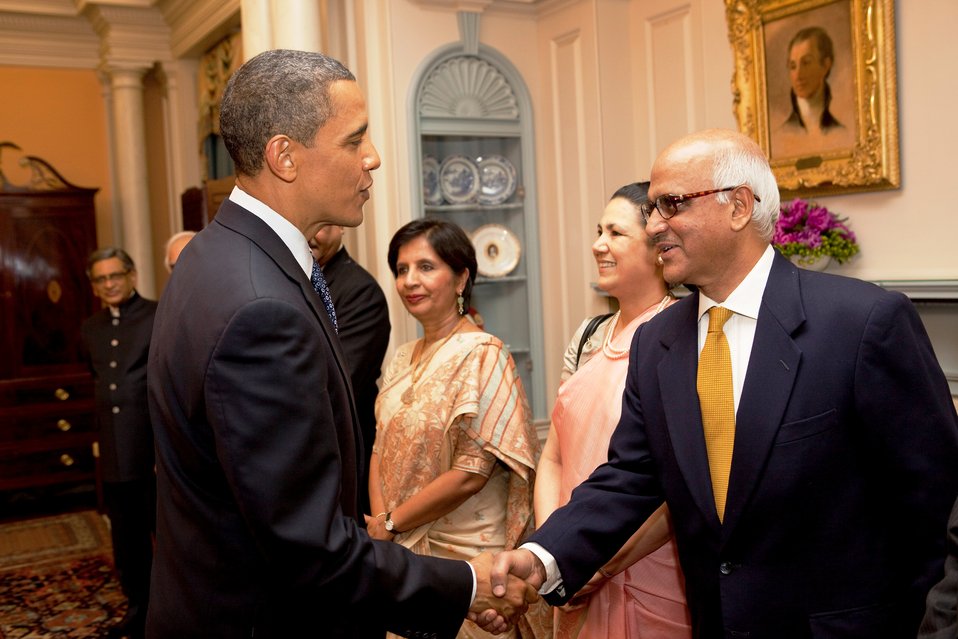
President Obama Shakes Hands With High-Ranking Indian Delegation Member

U.S. President Barack Obama shakes hands with a high-ranking member of the Indian Delegation at the U.S.-India Strategic Dialogue reception at the U.S. Department of State in Washington, D.C., on June 3, 2010.